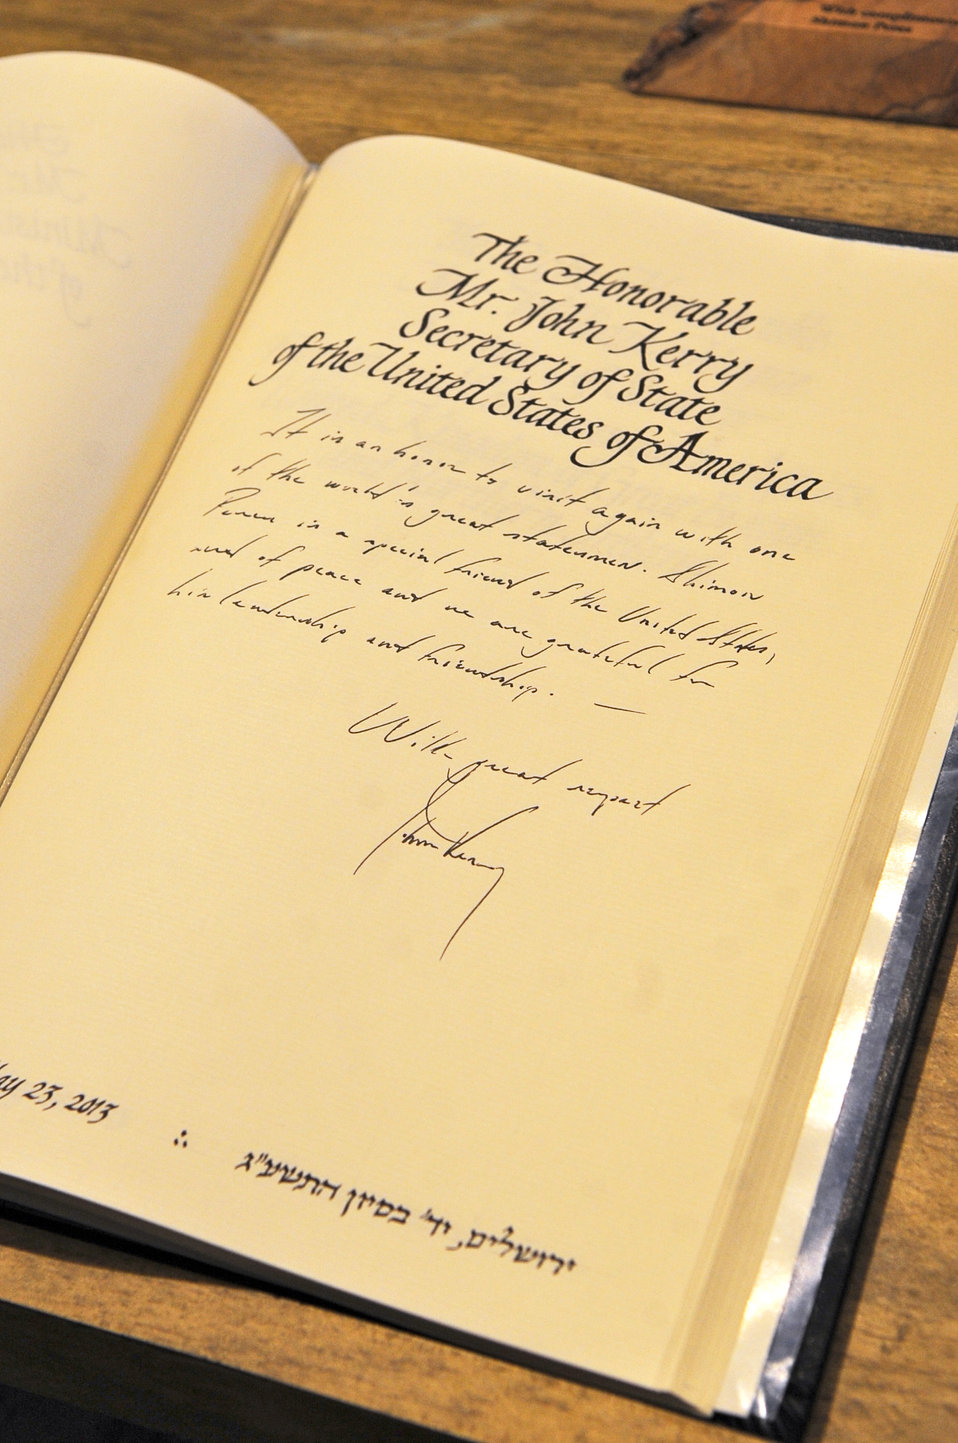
Secretary Kerry's Note in the Guestbook of Israeli President Peres

U.S. Secretary of State John Kerry signs the guestbook upon visiting the home of Israeli President Shimon Peres in Jerusalem on May 23, 2013. The inscription says: It is an honor to visit again with one of the world's great statesmen. Shimon Peres is a special friend of the United States, and of peace, and we are grateful for his leadership and his friendship. With great respect, John Kerry.